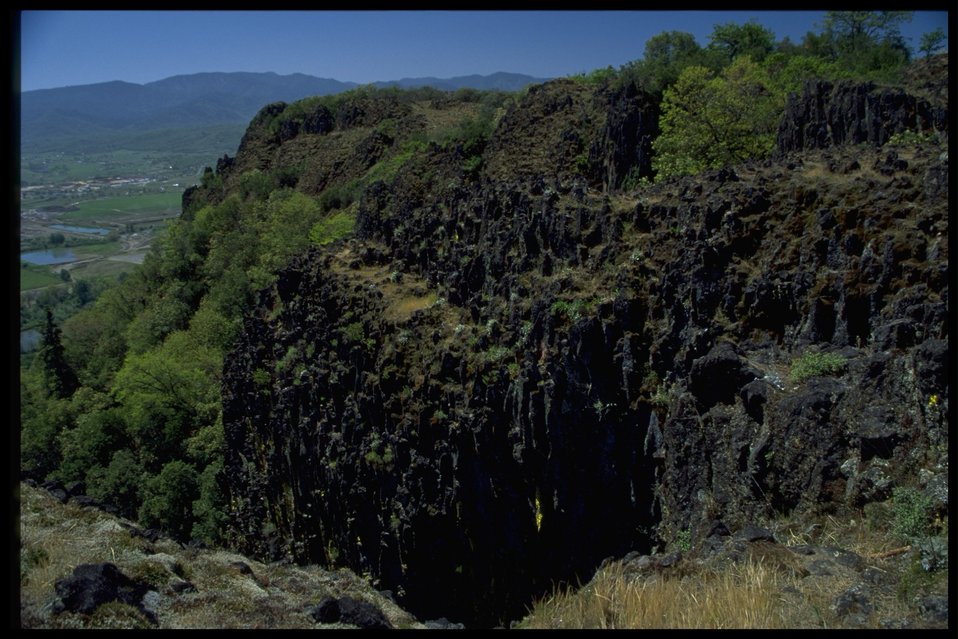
Scenic view of cliff face.